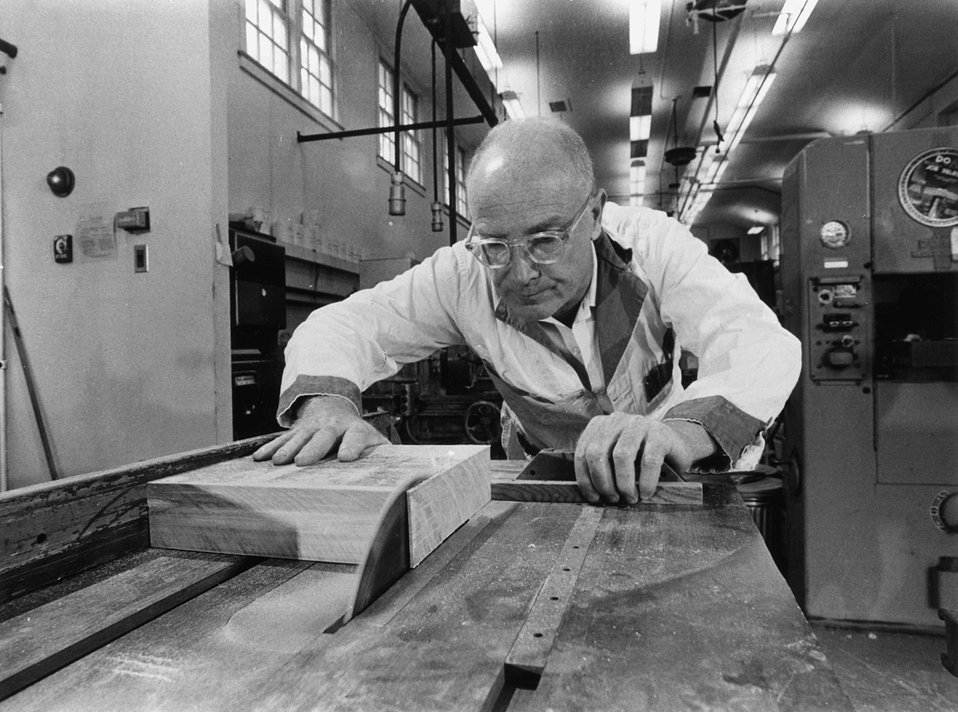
Among wastes converted to useful materials at the U.S. Atomic Energy Commission's Brookhaven National Laboratory are old newspapers and telephone directories. These have been converted into paper-plastic composites having a plywood-like quality and considerable structural strength. c. 1973